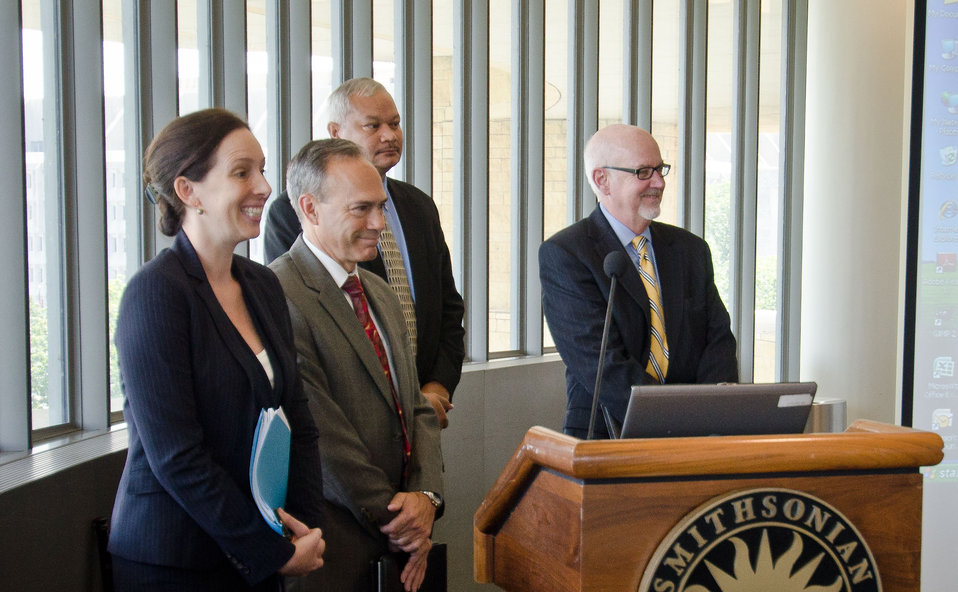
Left to right, U.S. Department of Agriculture (USDA) Marketing and Regulatory Programs Mission Area Deputy Under Secretary Joani Walsh, Grain Inspection, Packers and Stockyards Administration (GIPSA) Deputy Administrator Alan Christian, Animal and Plant Health Inspection Service (APHIS) National Tribal Liaison Terry Clark, Agricultural Marketing Service (AMS) Administrator Dave Shipman taking questions during at the first business meeting of USDA’s Council for Native American Farming and Ranching (CNAFR) held at the National Museum of the American Indian in Washington, D.C. on Tuesday, Aug. 14, 2012. CNAFR was created to advise the Secretary on ways to eliminate barriers to participation for Native American Farmers and Ranchers in USDA programs. The Council was established as part of the Keepseagle settlement, and is conducted under the oversight of USDA's Office of Tribal Relations under the Office of the Secretary of Agriculture.